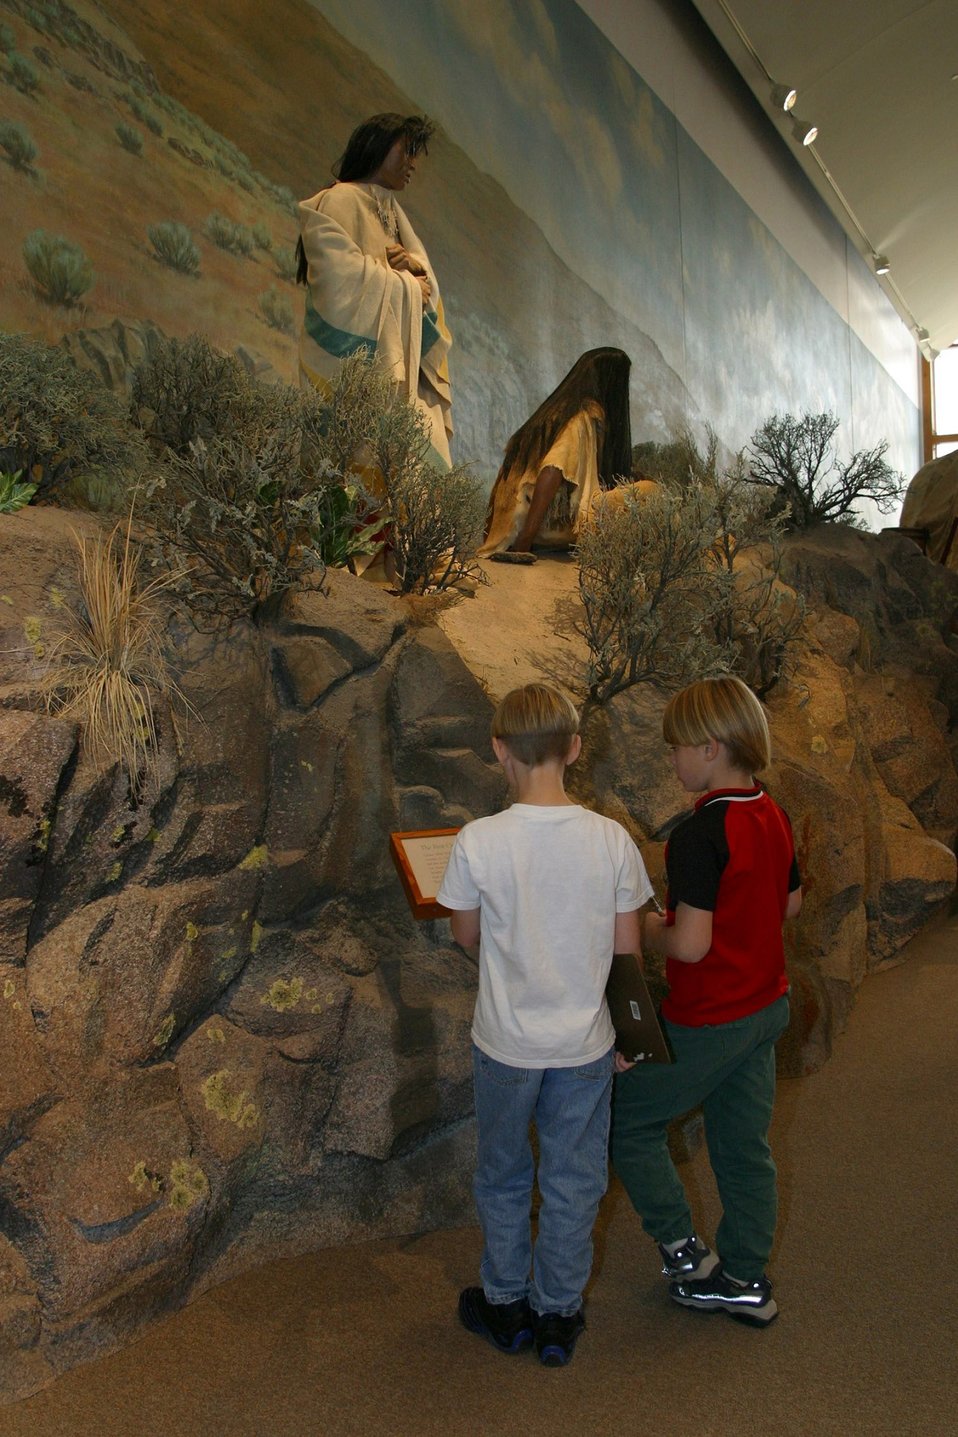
Hundreds of school children visit the National Historic Oregon Trail Interpretive Center every year.